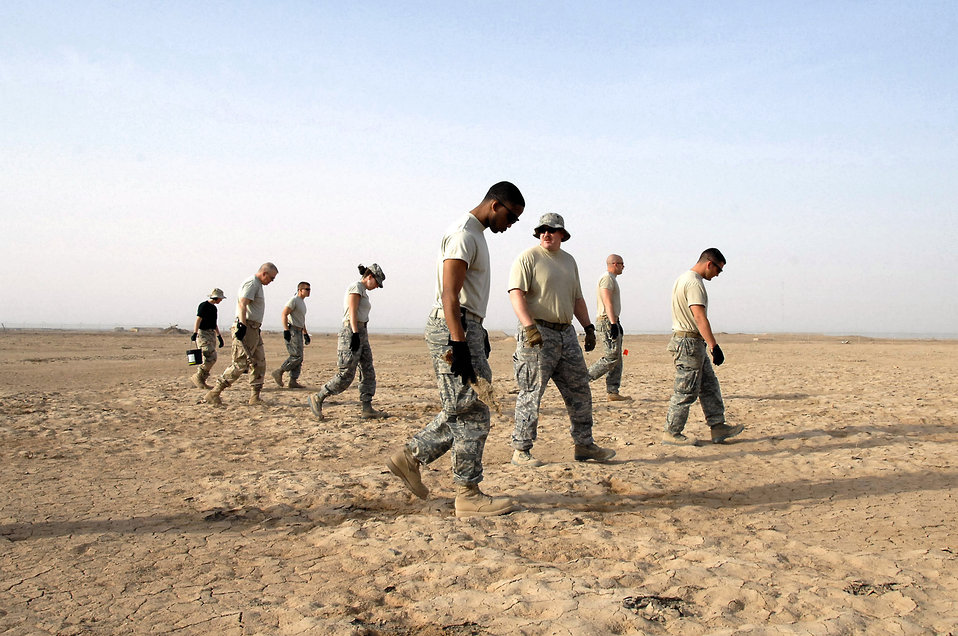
Picking up ordnance debris

An explosive ordnance disposal team walks across 159 acres of unexploded ordnance fields March 26 at Ali Base, Iraq. The 407th Air Expeditionary Group Airmen picked up debris and flagged un-removable unexploded ordnance for detonation.